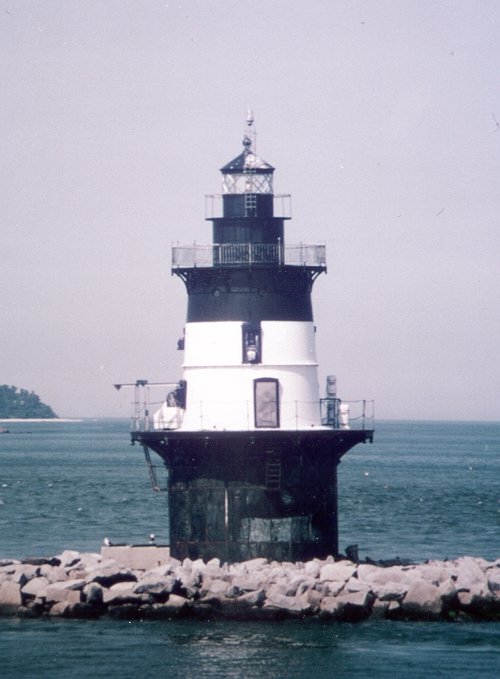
Orient Point Light